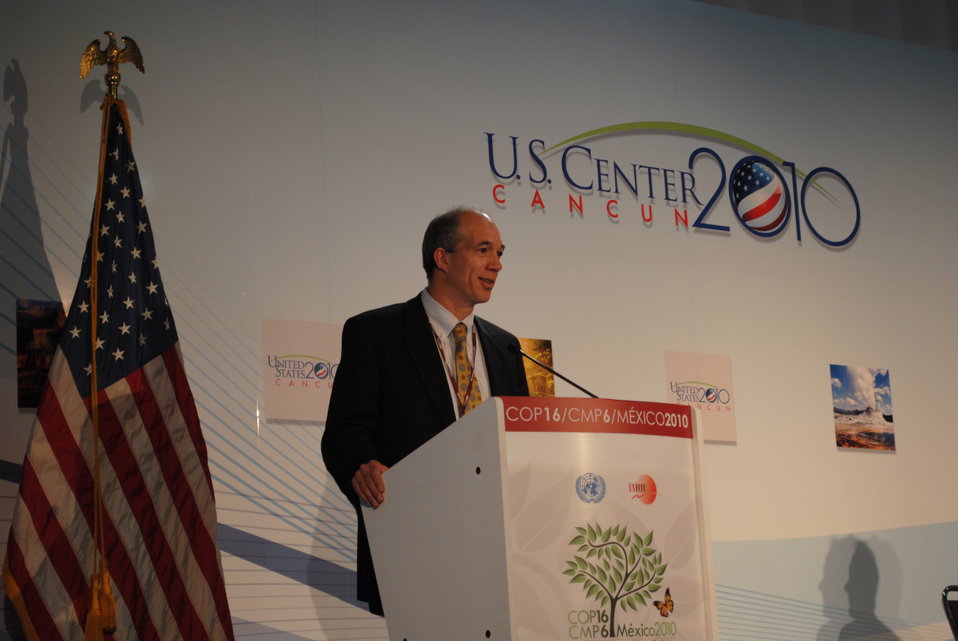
USDA's Bill Hohenstein Addresses the U.S. Center

Bill Hohenstein of the U.S. Department of Agriculture addresses the U.S. Center COP-16 in Cancun, Mexico, on December 8, 2010.